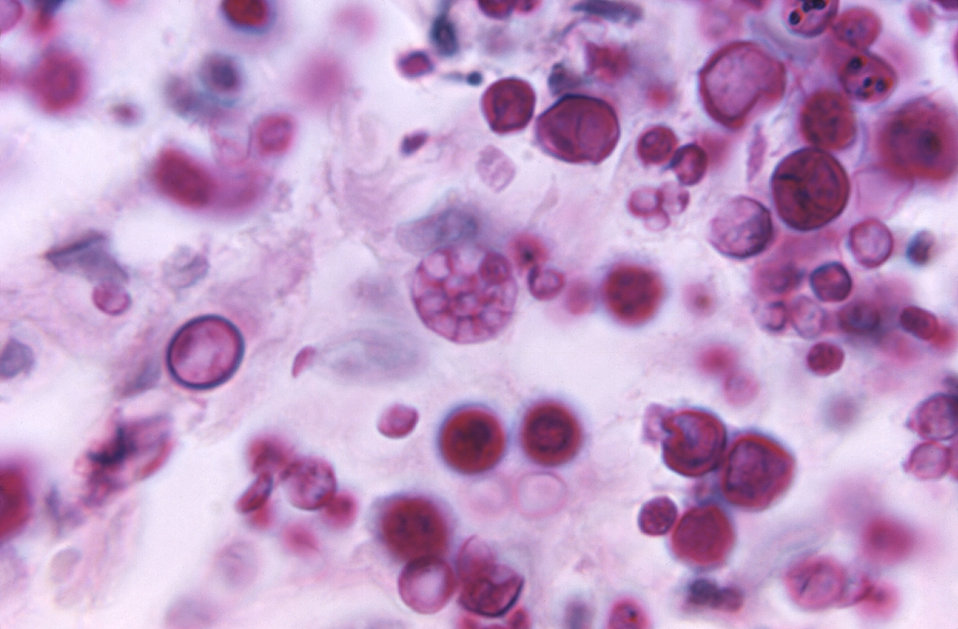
Under a magnification of 1850X, this PAS-stained (Periodic acid-Schiff) photomicrograph revealed histopathologic changes found in a tissue sample from a case of protothecosis, which is caused by the green algae, Prototheca.